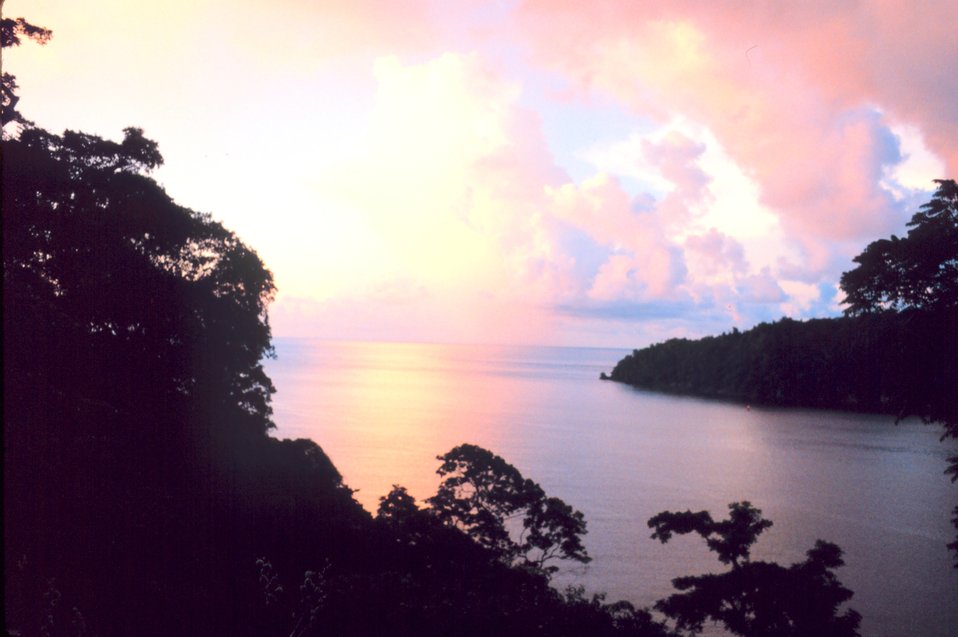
Sunset over Man-of-War Bay